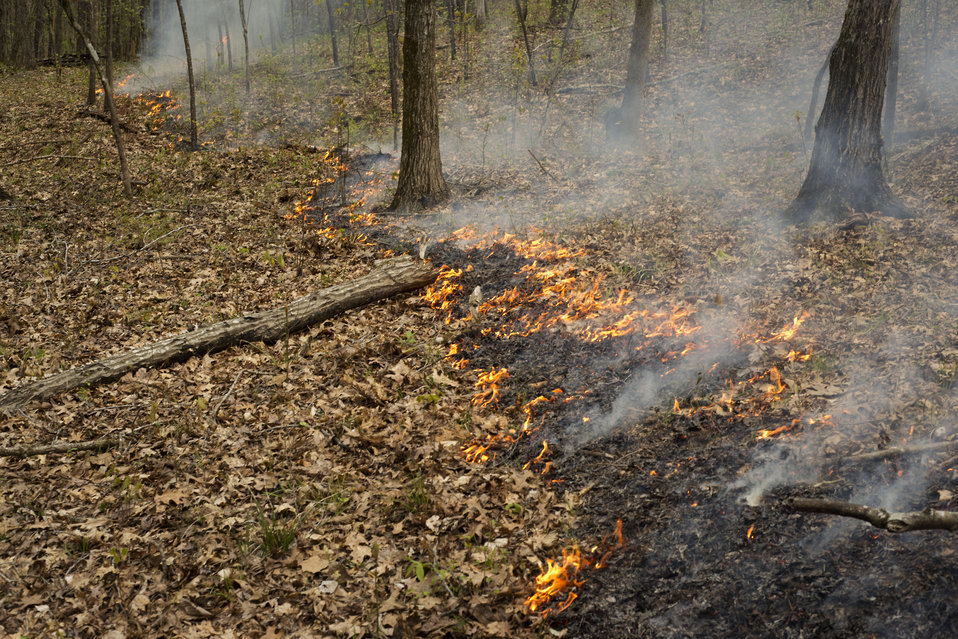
Piedmont C26 Prescribed Fire

On April 9th 2014 USFWS firefighters at Piedmont NWR conducted a 357 acre prescribed fire to help reduce the risk of wildfire and improve habitat. The area burned contains mostly hardwoods with some pine stands intermixed. This unit needs frequent fire to help transition to more open understory with more pine which will improve Red Cockaded Woodpecker habitat on the refuge.